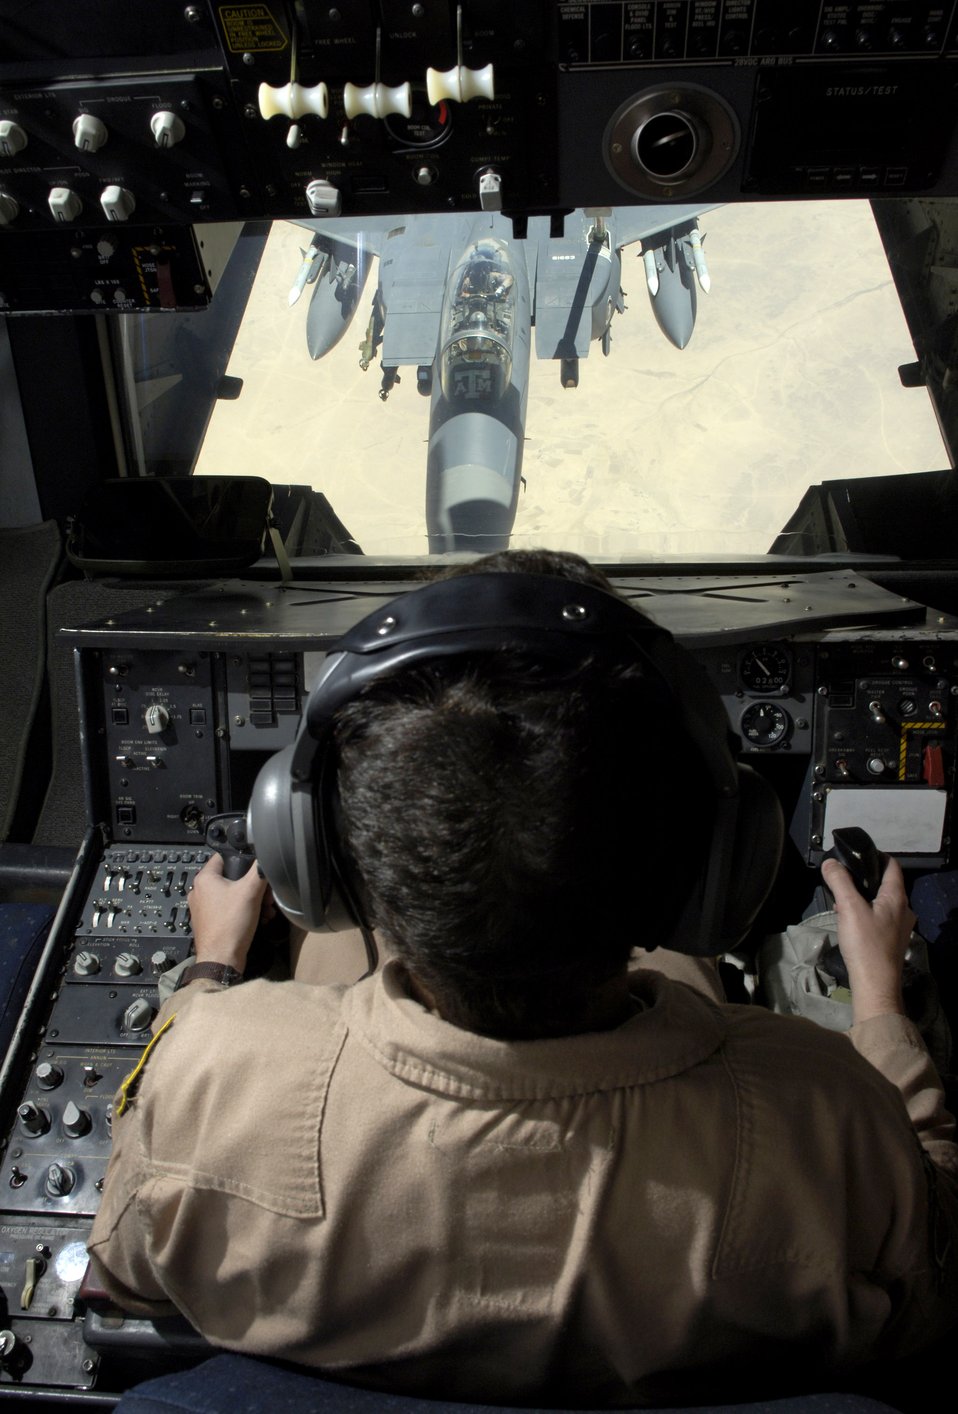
On a mission

Master Sgt. Todd McPeak refuels an F-15E Strike Eagle during an Operation Iraqi Freedom mission on July 18. Sergeant McPeak is a KC-10 Extender boom operator for the 908th Expeditionary Air Refueling Squadron in Southwest Asia.